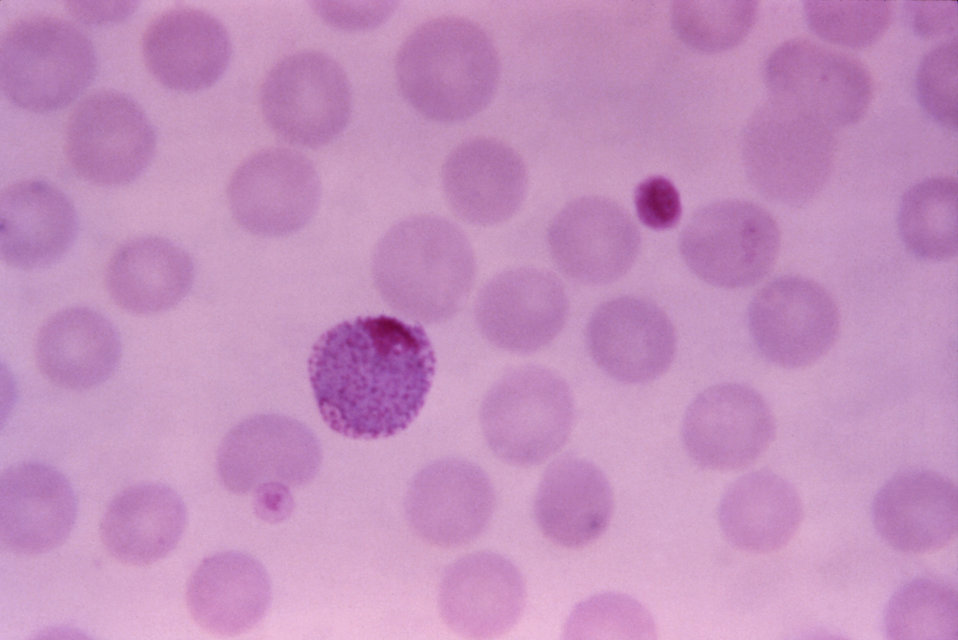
This thin film Giemsa stained micrograph depicts a Plasmodium vivax macrogametocyte.